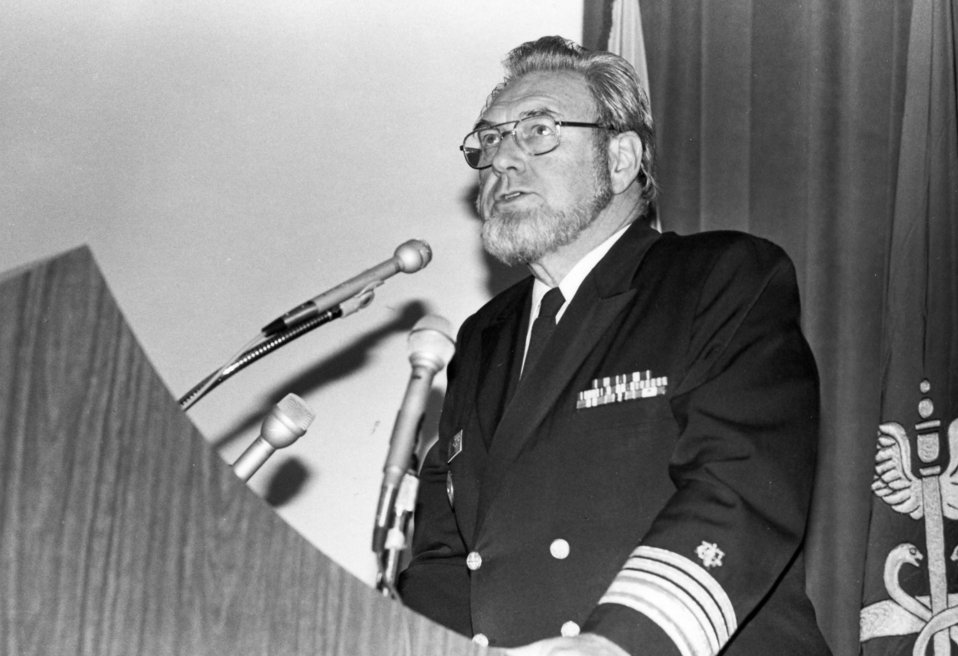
This photograph showed former Surgeon General, Dr. C. Everett Koop while he was addressing Centers for Disease Control employees during a 1980s presentation.